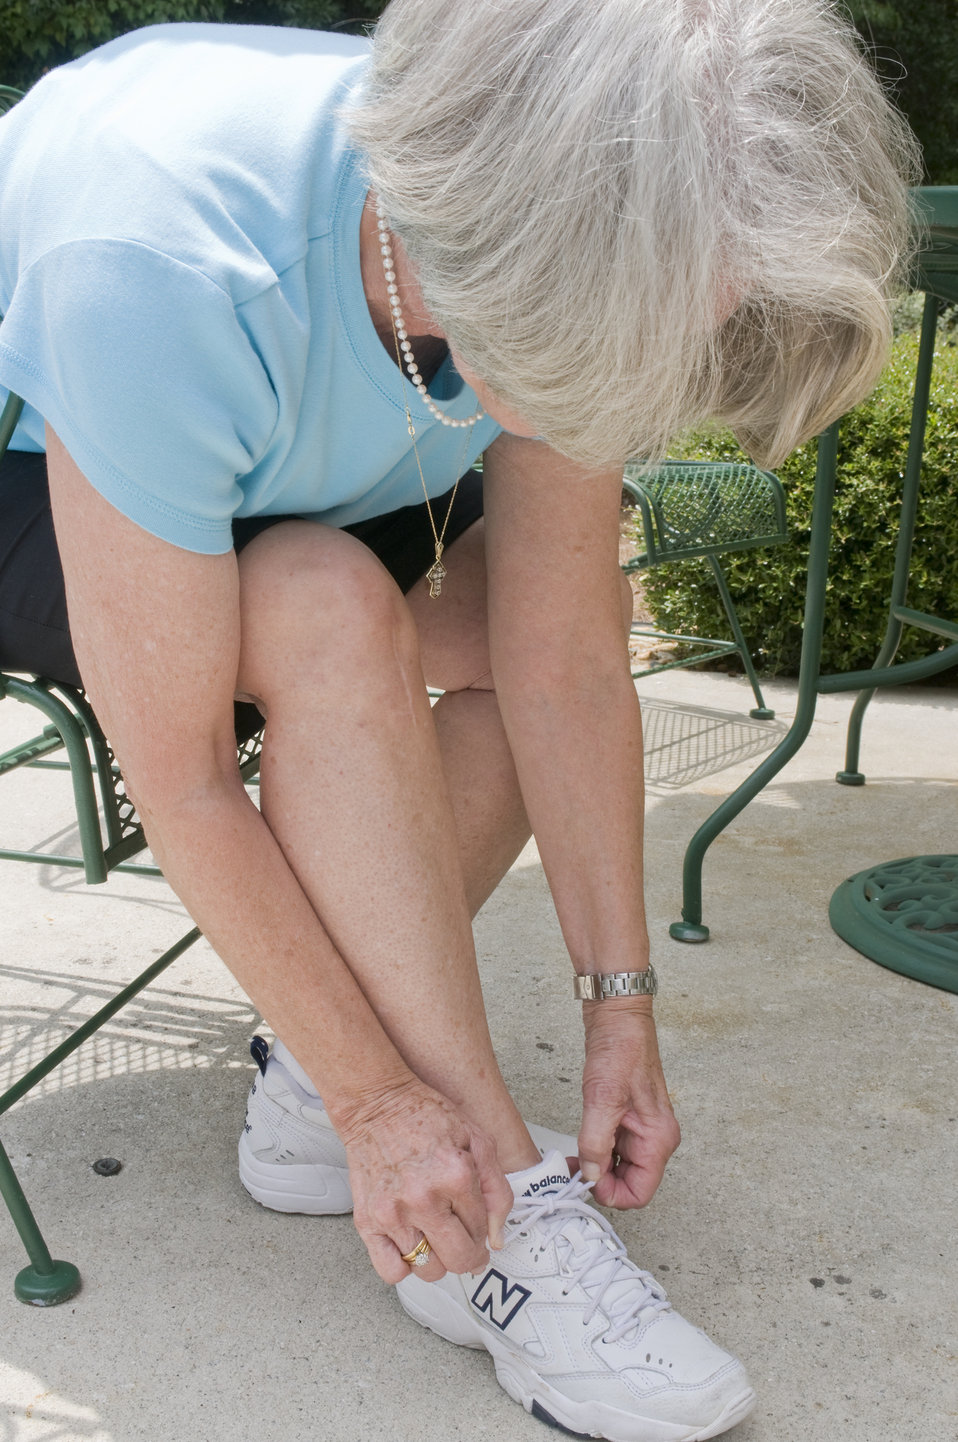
About to set out on her daily walk, the woman pictured here was seated in an outdoor patio chair, and was bent over in the process of tying her right sneaker laces. It was a sunny Georgia day, and she'd applied a layer of sunscreen to her sun-exposed skin. Hopefully, she'd also bring a bottle of water with her on her walk, as well, in order to avoid the possibility of dehydration.